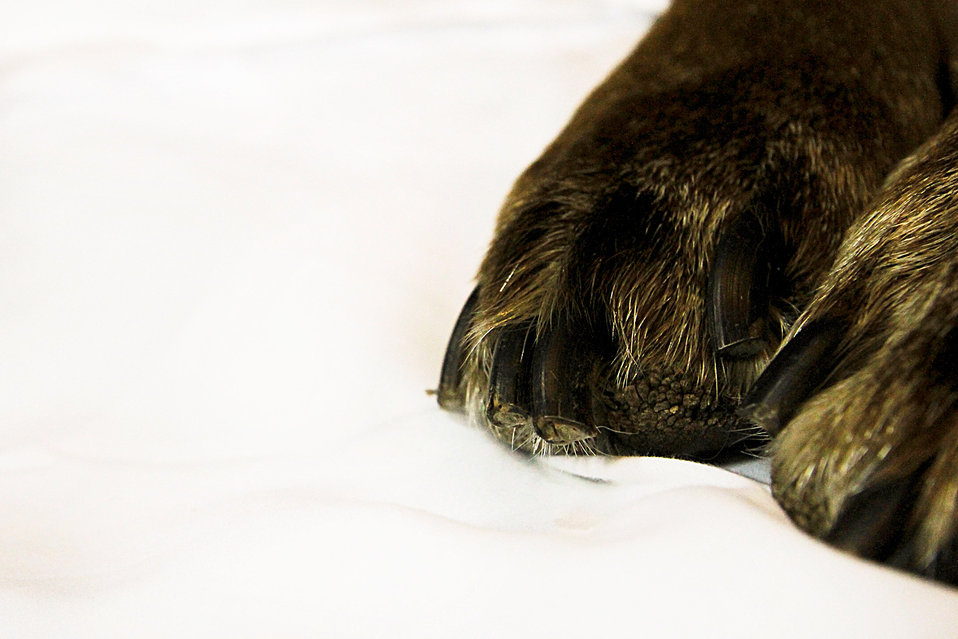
Dog paws

A closeup of dog paws.